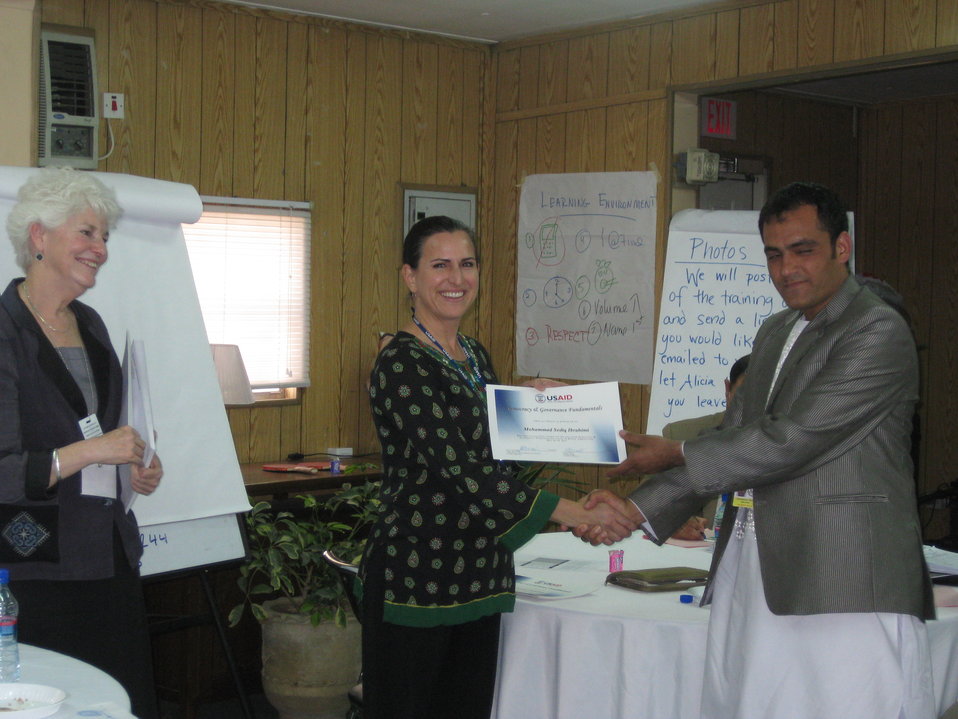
Afghan Youth Voices 054